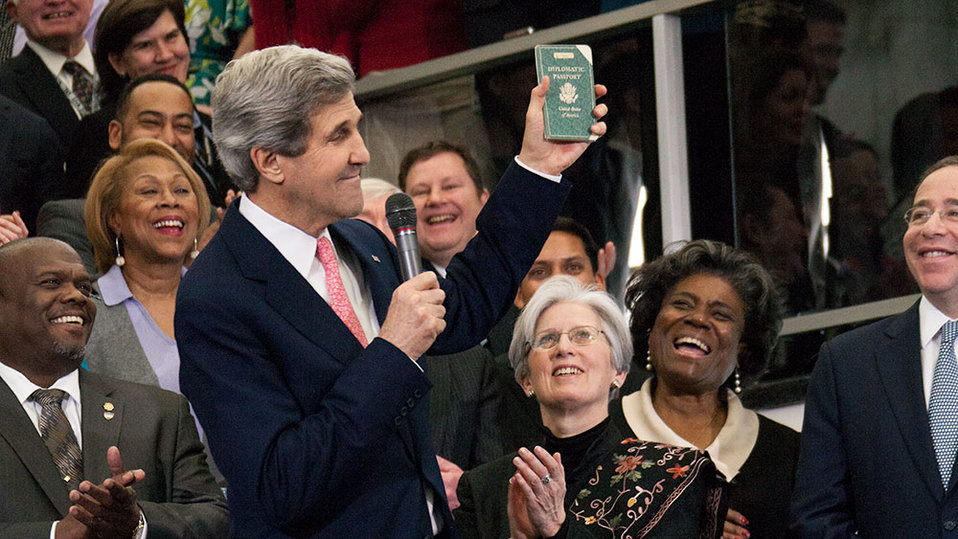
Secretary Kerry Delivers Welcome Remarks

U.S. Secretary of State John Kerry displays his first diplomatic passport, while delivering welcome remarks to U.S. Department of State employees in Washington, D.C., February 4, 2013.